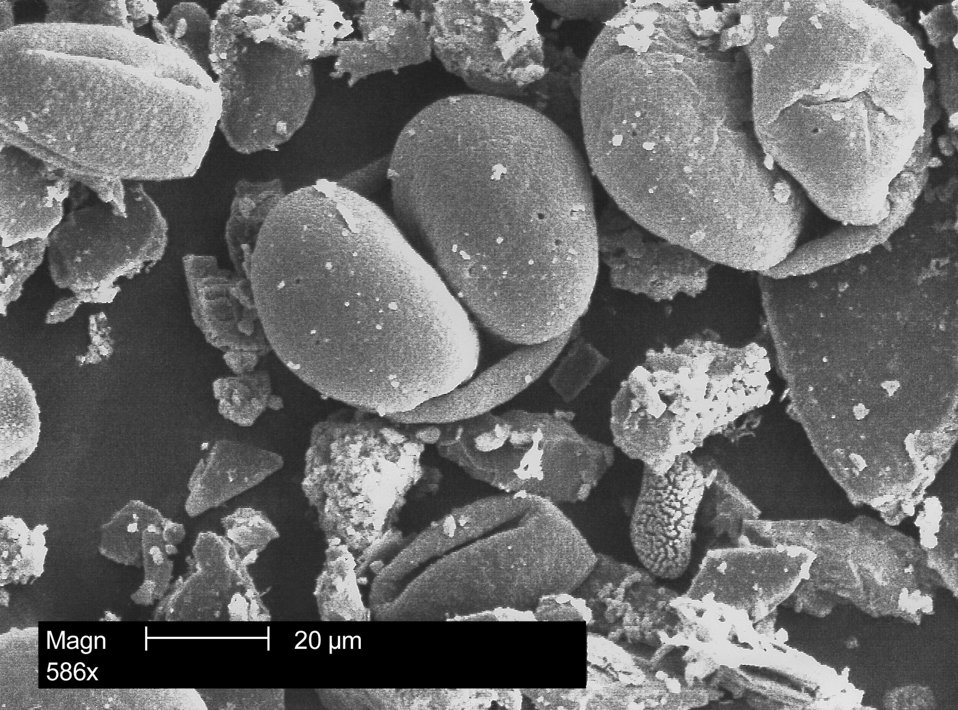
This electron micrograph depicts a morphologic array of pollen granules found on the CDC campus in Atlanta, GA, in spring, 2004.